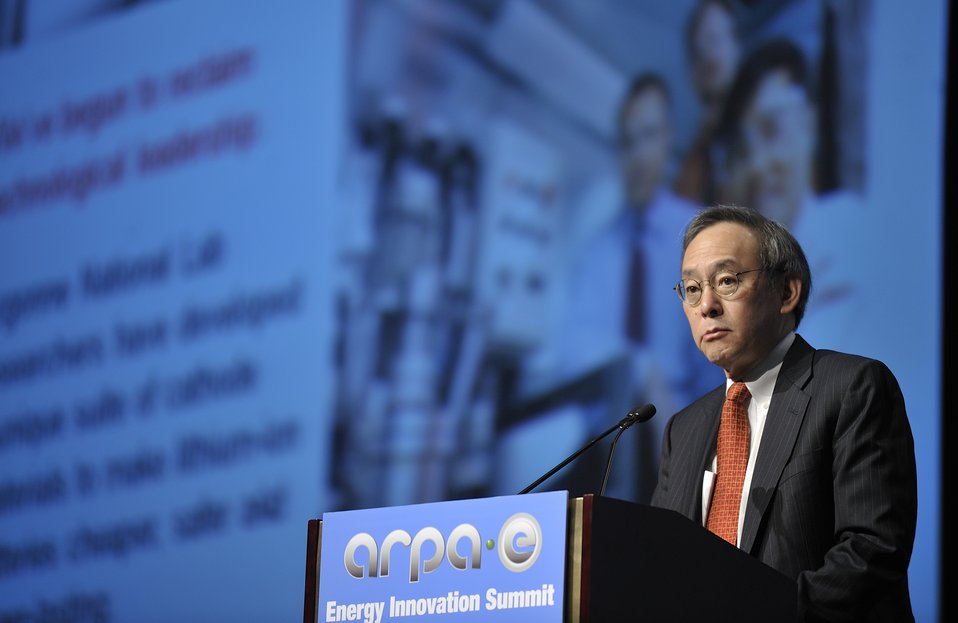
ARPA-E Energy Innovation Summit 2011, 1 of 83

Steven Chu, Secretary, United States Department of Energy